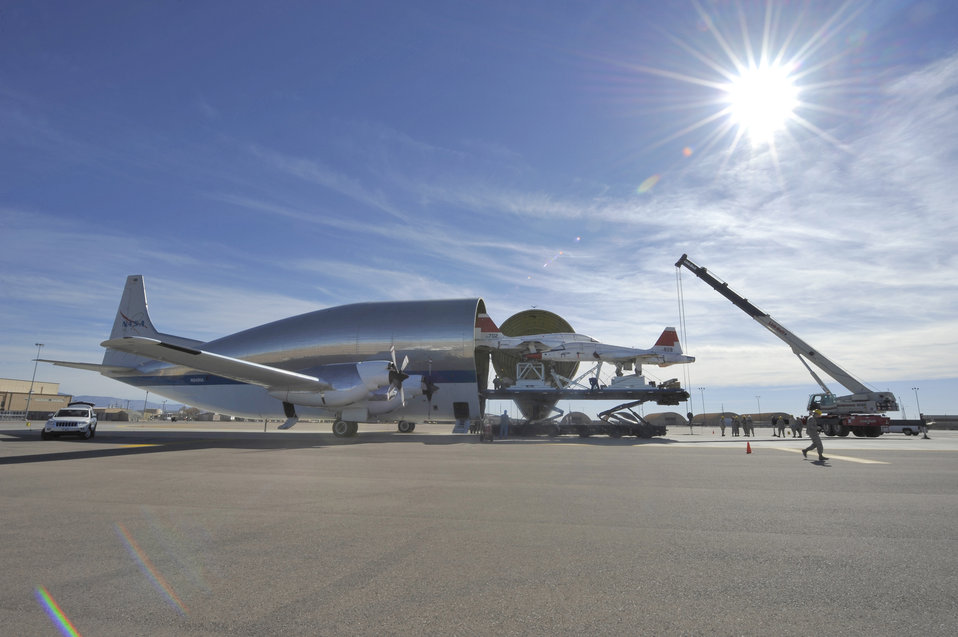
Holloman Airmen provide 5th generation fighter support

Two T-38 Talons sit inside NASA's Super Guppy aircraft Dec. 14, 2010, after being shipped to Holloman Air Force Base, N.M. The shipment is the first two of 15 T-38s to be shipped to Holloman AFB to be inspected and regenerated before being flown to Joint Base Langley-Eustis, Va. M1 Support Services officials maintain the T-38 Consolidated Aircraft Maintenance program and is the main depot in Air Combat Command for repairing the T-38s. After every 450 flight hours at their operating location, the T-38s will come back for an inspection.